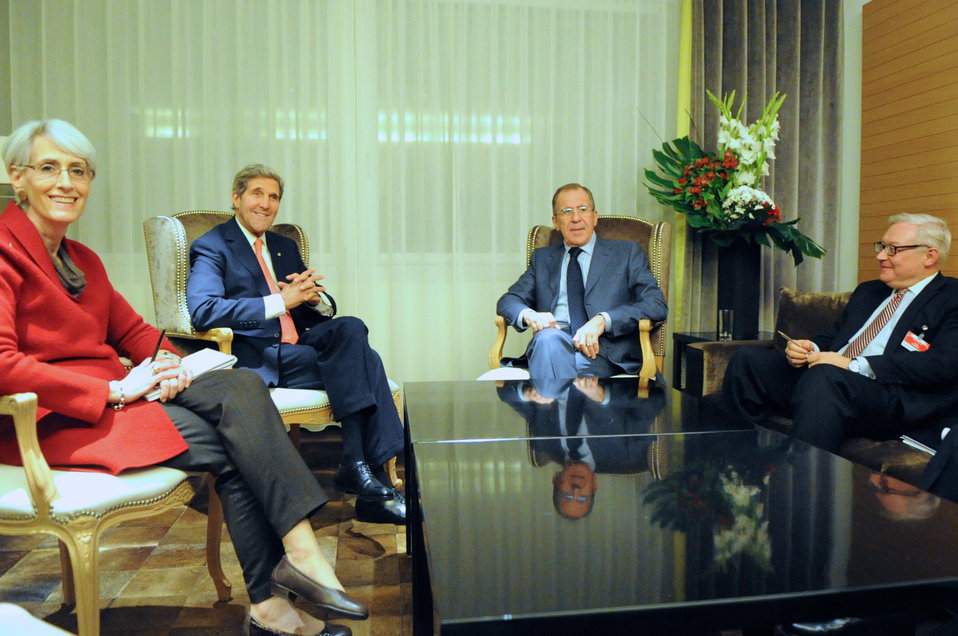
Secretary Kerry Meets With Russian Foreign Minister Lavrov

U.S. Secretary of State John Kerry and his Russian counterpart, Foreign Minister Sergey Lavrov, sit with their top deputies -- Under Secretary for Political Affairs Wendy Sherman and Deputy Foreign Minister Sergey Rybakov -- during a break in meetings in Geneva, Switzerland, on November 9, 2013, that focused on Iran's nuclear capabilities.